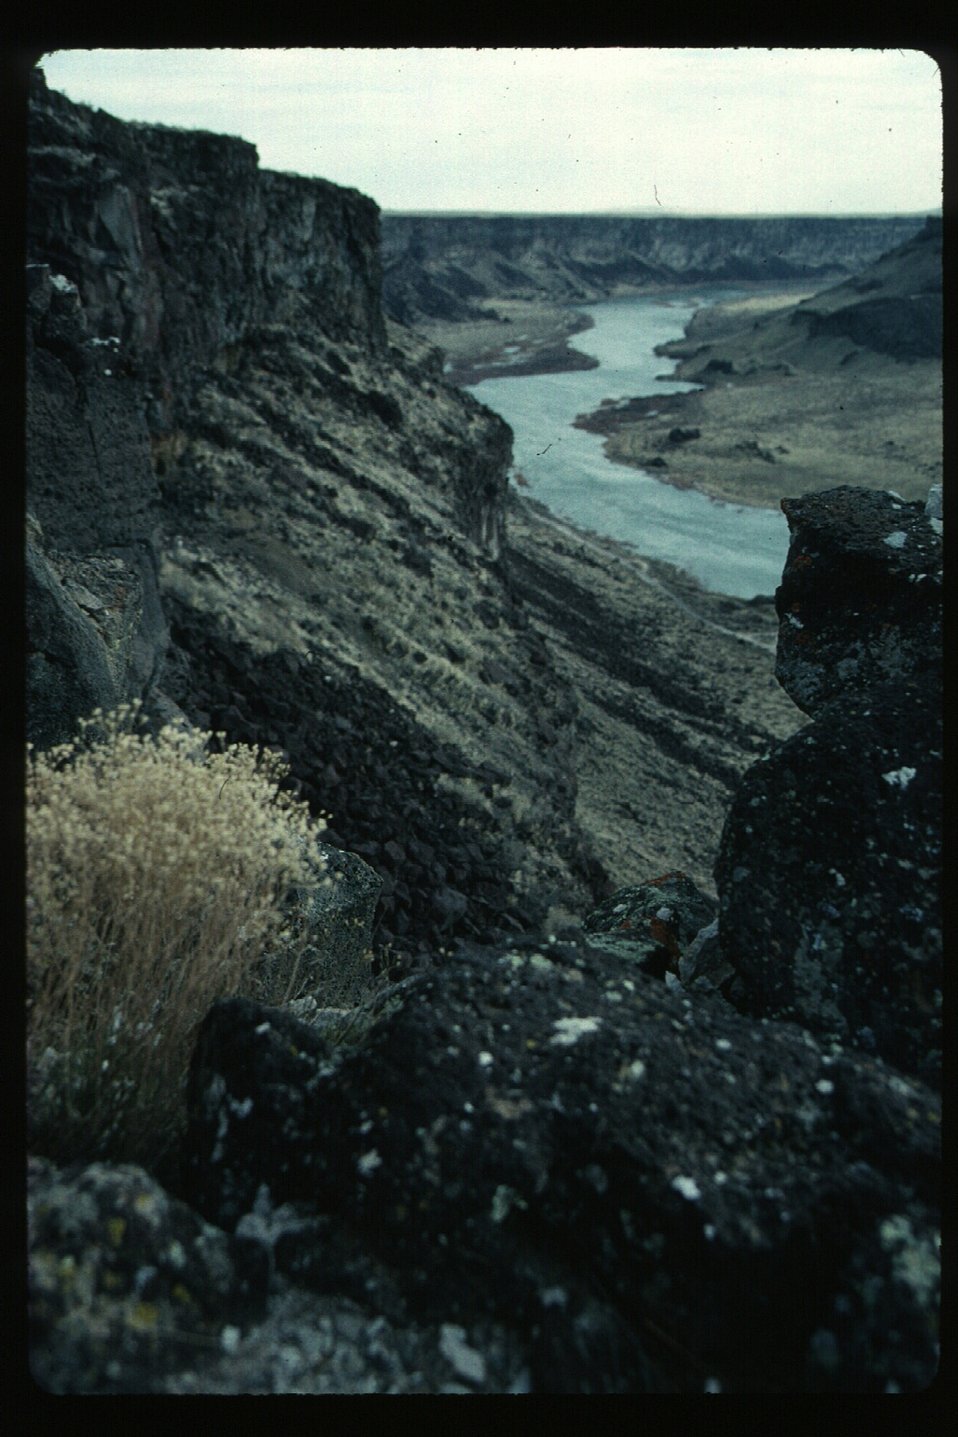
Snake River Canyon Owyhee Field Office LSRD Lower Snake River District Dedication Point